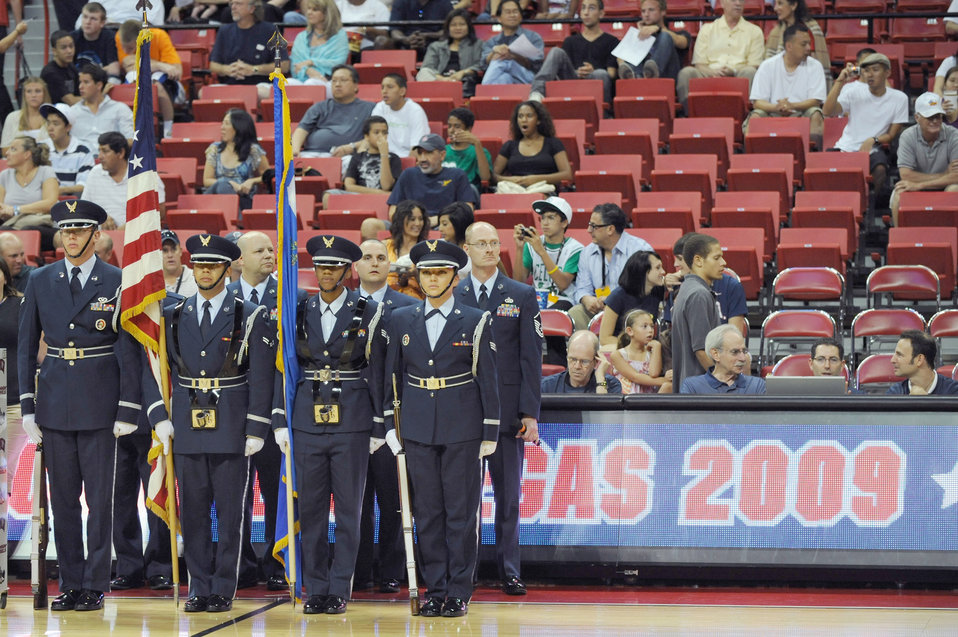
Nellis Airmen honored at USA Basketball exhibition

Members of the Nellis Air Force Base Honor Guard team -- Senior Airmen Julissa Stich and Gina Finley and Airmen 1st Class Robert Valladares and Ben Schultz -- prepare to present the colors for a USA Basketball exhibition game July 25 at the Thomas and Mack Center in Las Vegas. The USA Basketball Showcase in Las Vegas is the first training camp and exhibition game leading up to the 2012 Olympic Games.